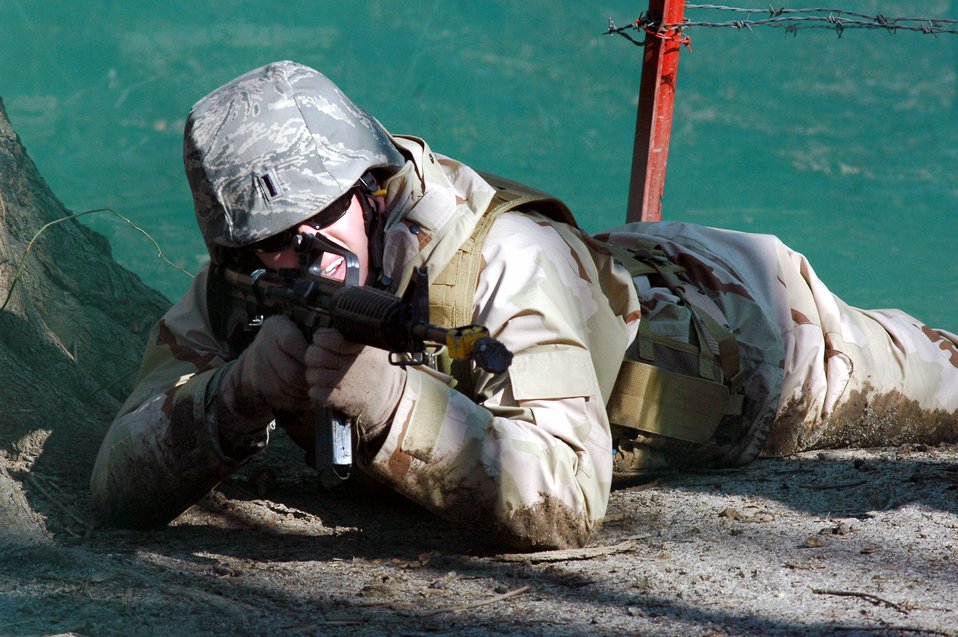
Airmen complete first Air Advisor Course

1st Lt. Jared Casebolt provides